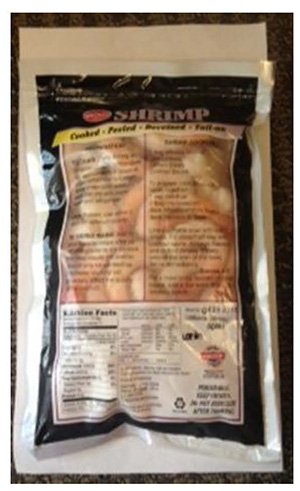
RECALLED – Shrimp (Wholey Peeled, Cooked, Tail-On 31/40)

July 27, 2013 – Product Recall – Lipari Foods Recalls Wholey Peeled Cooked Tail-on 31/40 Count Shrimp Because of Possible Health Risk.